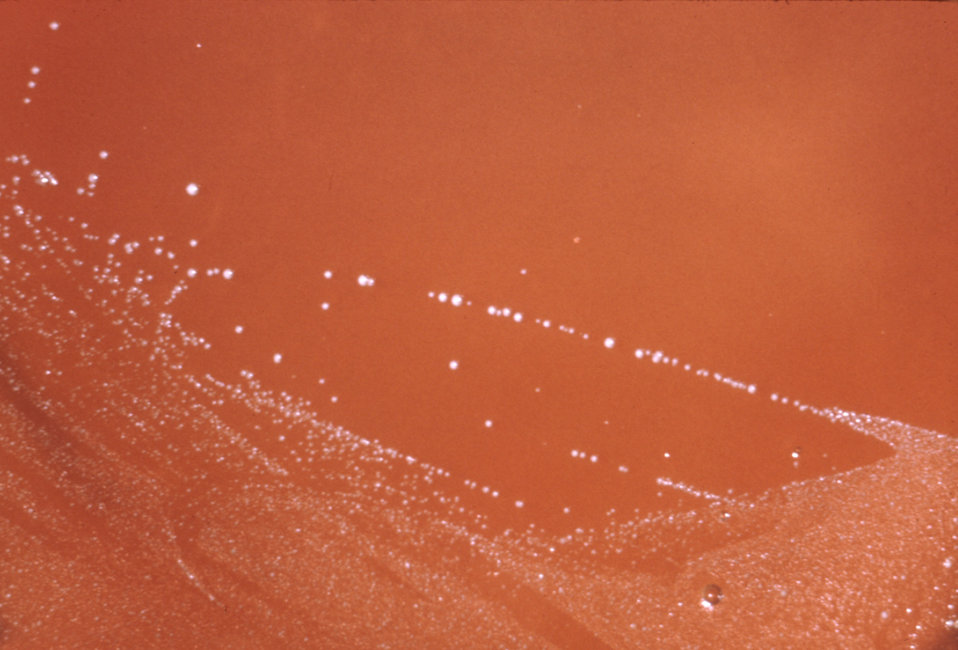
This image shows a blood agar culture growing colonies of the gram-positive bacteria Peptococcus magnus bacteria.